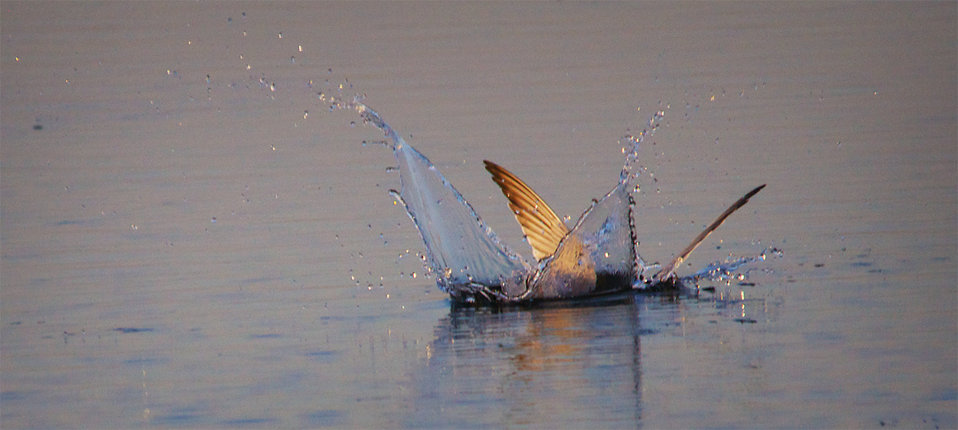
Diving Forster's Tern

A diving Forter's Tern sprays water mirroring its wings at Sonny Bono National Wildlife Refuge.